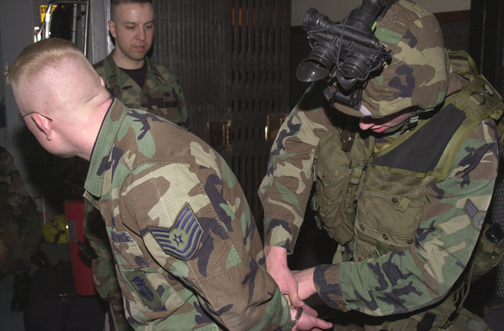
Take him away

MINOT AIR FORCE BASE, N.D. -- Airman 1st Class Daniel Phelps, right, handcuffs an